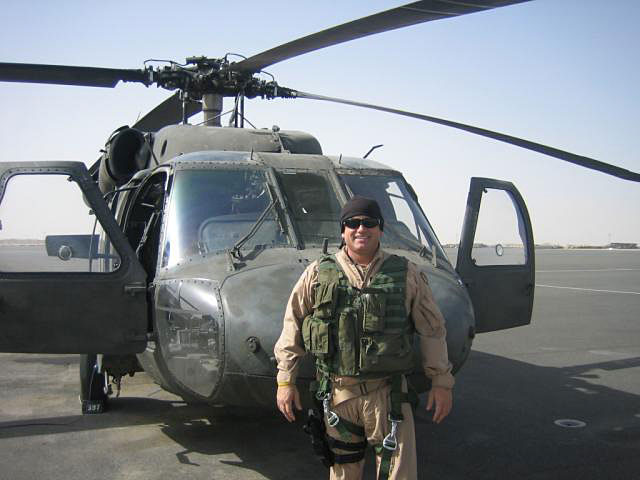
Anthony Lascano, National Aviation Manager, served 30 years as a U.S. Army Aviator. He provided command and staff actions in support of US Army Aviation operations throughout the world. He served in various command/staff positions throughout the Army with combat tours in Kuwait, Kosovo, and Iraq. His rank at the time of retirement was Lieutenant Colonel. He brings this talent, training, and experience to his very demanding position within the Service.